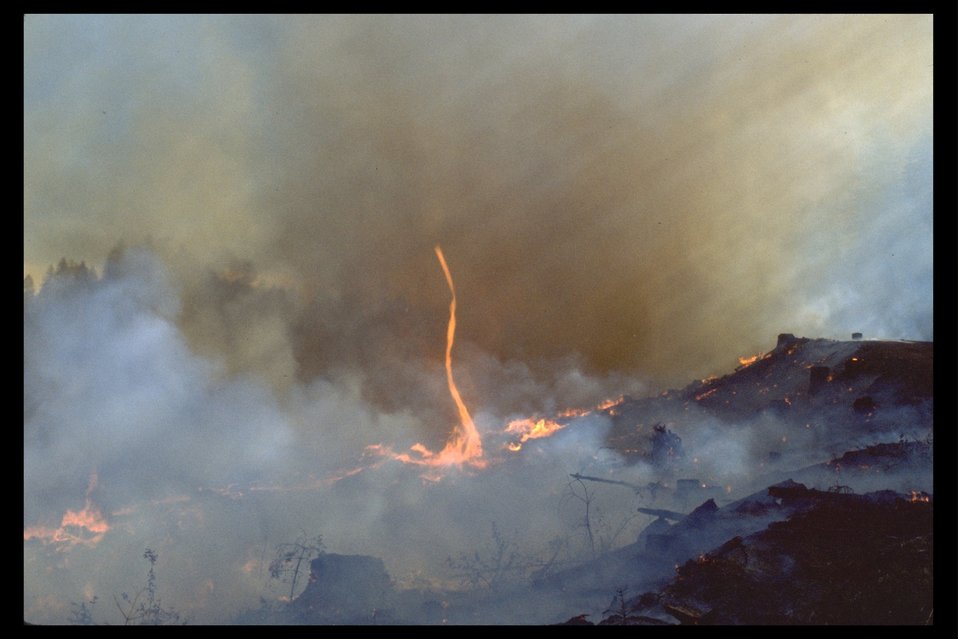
Fire whirl at the Morine Creek Fire.